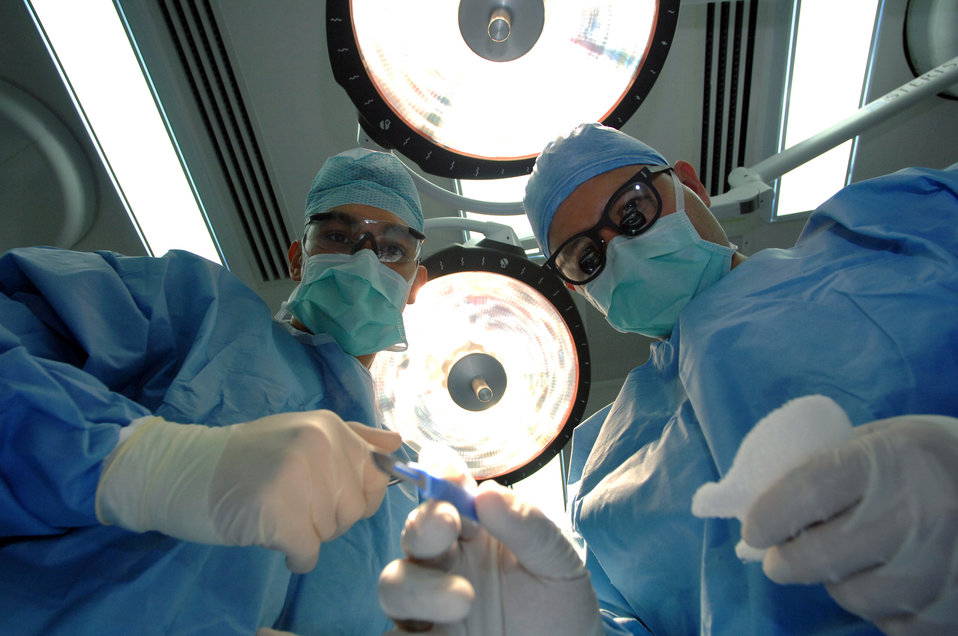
Patient perspective

Maj. Ky Kobayashi and Airman 1st Class Emanuel White prepare for surgery on a